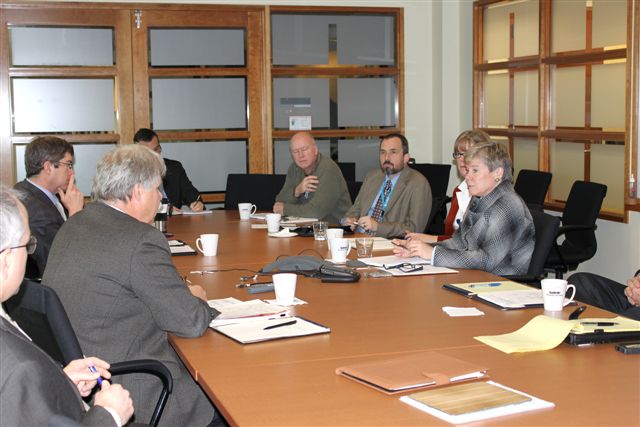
Assistant Secretary Gottemoeller Discusses Arms Control and Verification Challenges

Rose Gottemoeller, Assistant Secretary of State for Arms Control, Verification and Compliance, discusses arms control and verification challenges at the Pacific Northwest National Laboratory in Richland, Washington, on January 17, 2012.